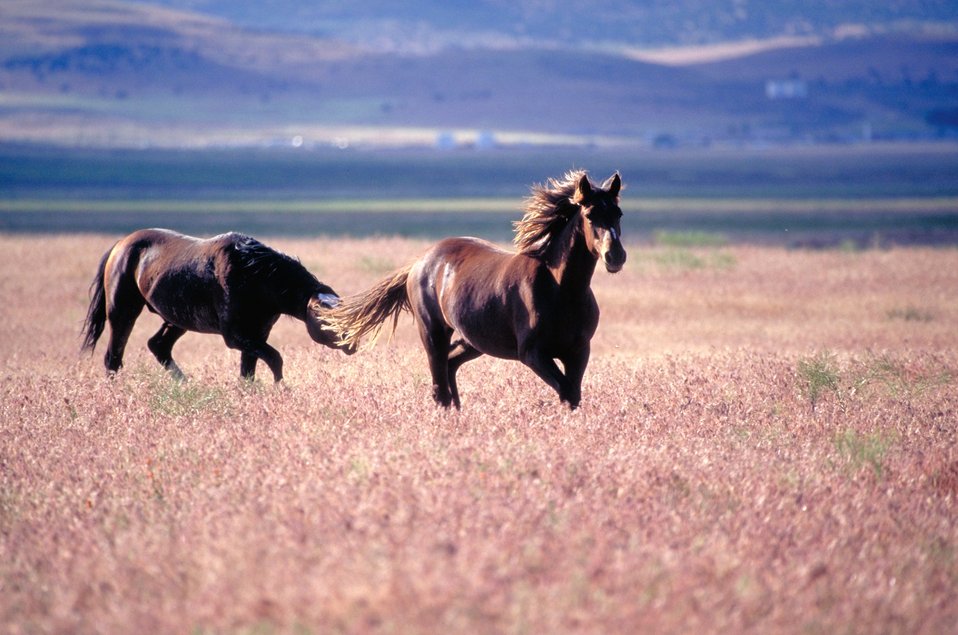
Onaqui Herd near Dugway, Utah.